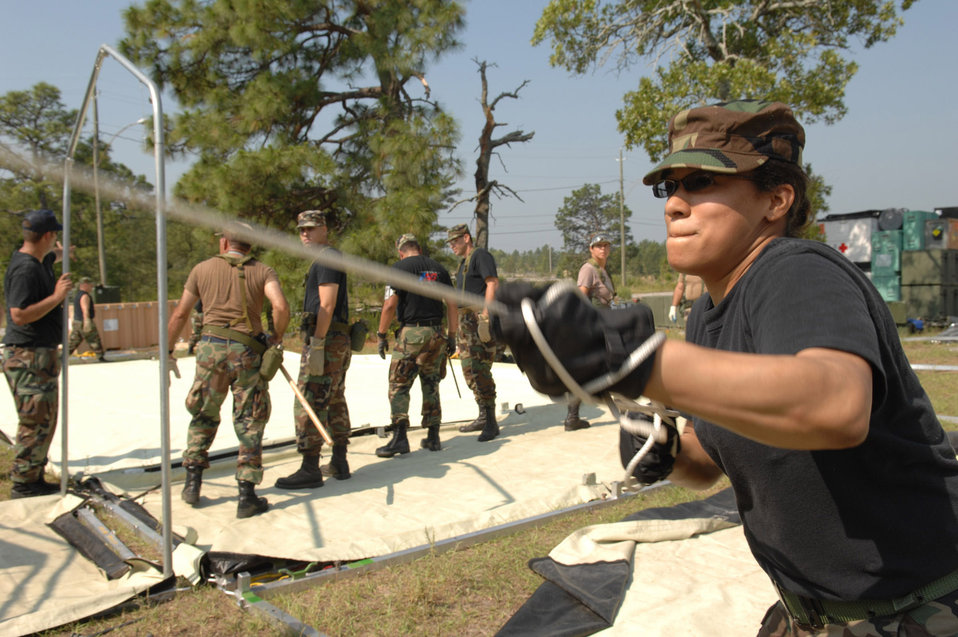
Golden Medic 2007

Tech. Sgt. Petula Moithukshung, 106th Medical Group, Gabreski AFB, NY, assists in constructing an Alaskan Medical Shelter by using rope to pull the roof cover into place during Golden Medic 2007. Golden Medic is a yearly medical exercise sponsored by the U.S. Army designed to provide a realistic training experience to participating combat support and service support units, while enhancing the overall training and readiness of Army and Air Force medical units.